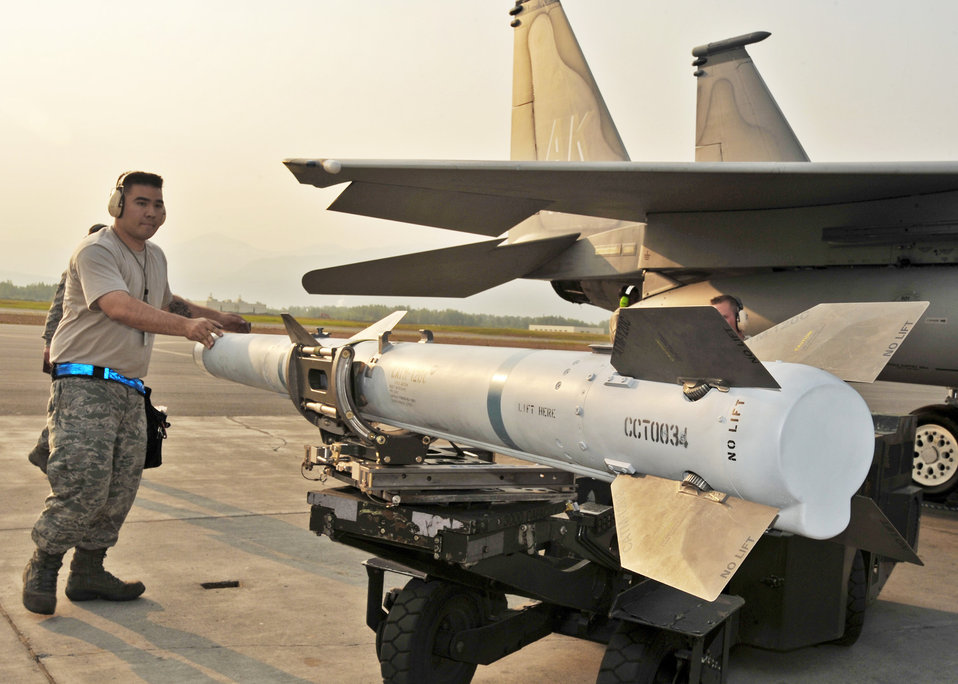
Alaskan load crews compete

Staff Sgt. Kevin Cucuzza walks an AIM-120 missile toward an F-15 Eagle to be loaded during a load crew competition July 10 at Elmendorf Air Force Base, Alaska. He is with the 3rd Aircraft Maintenance Squadron. The purpose of the competition is to demonstrate and test quick turn weapon loads.